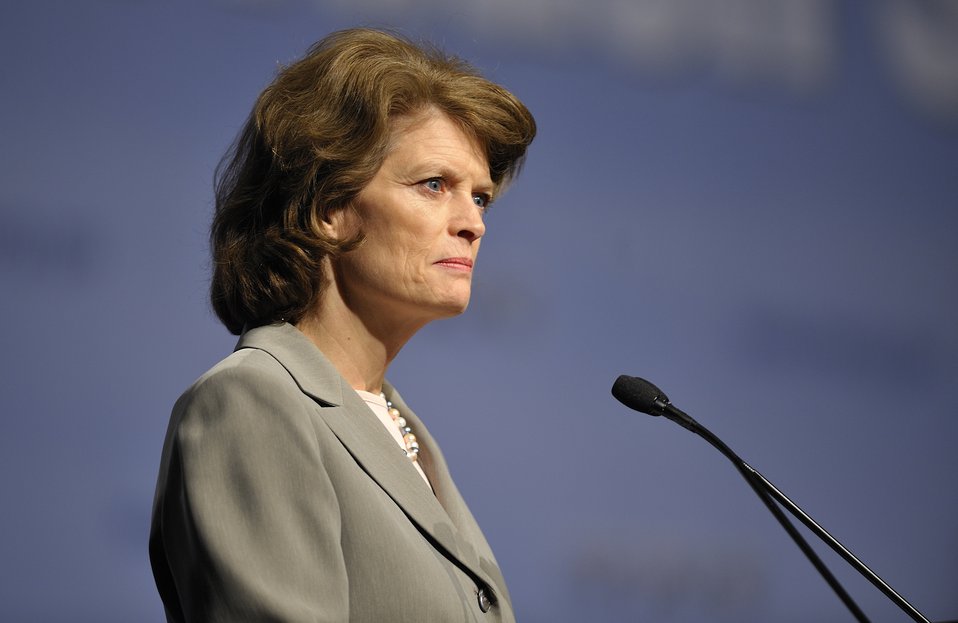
ARPA-E Energy Innovation Summit 2011, 37 of 83

Senator Lisa Murkowski (I-AK).